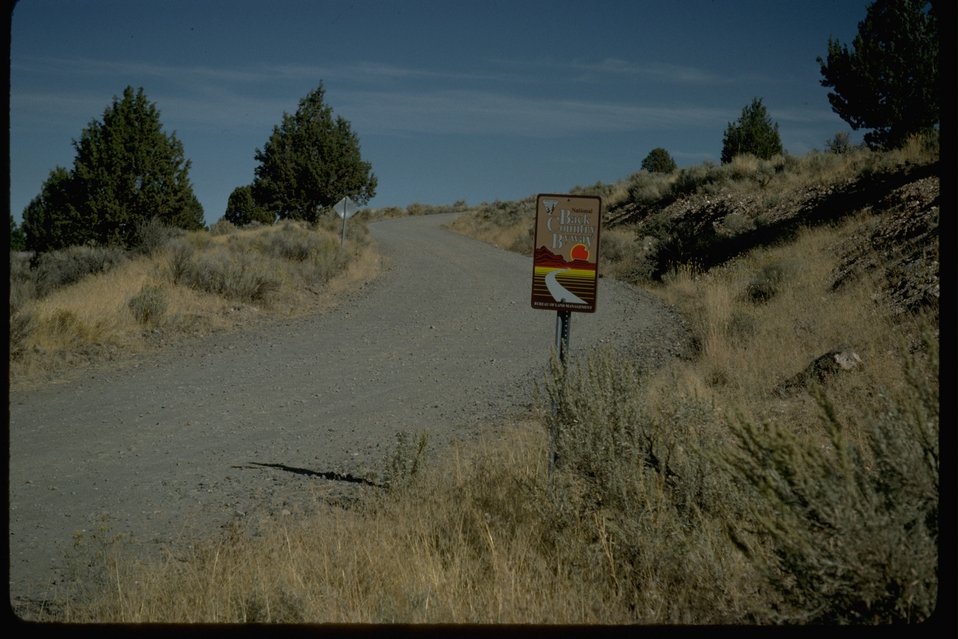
Steens Mountain back country byway sign near French Glen.